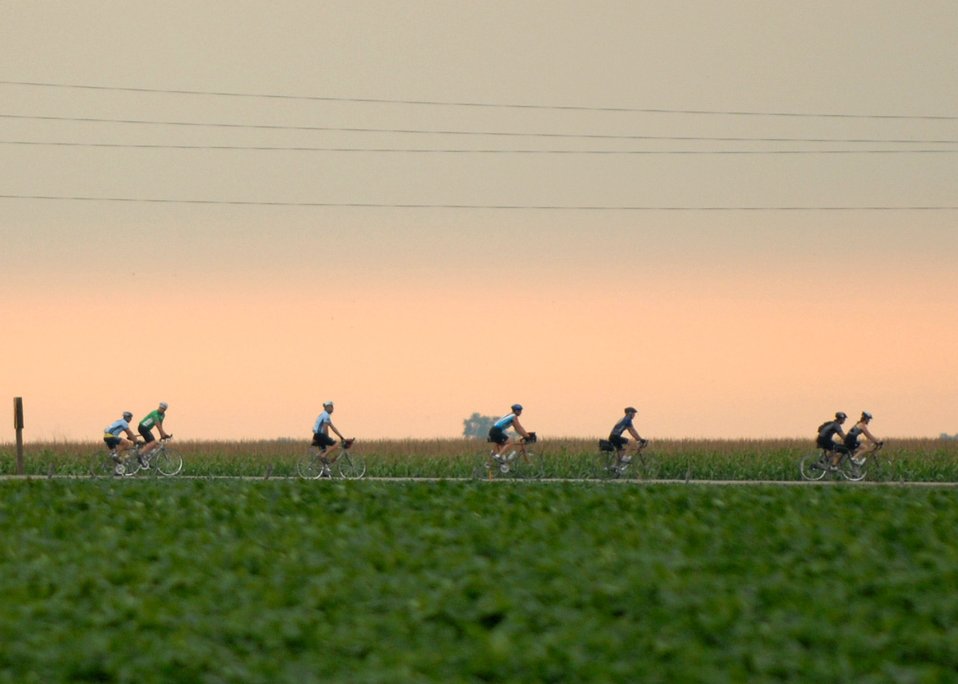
Airmen cycle across Iowa

Some of the 148 members of the U.S. Air Force Cycling Team ride across the Iowa countryside from Spencer to Humboldt July 23 during the third day of the Register's Annual Great Bike Ride Across Iowa, known as RAGBRAI, a cycling event sponsored by the Des Moines Register newspaper. This is the 13th year the Air Force Cycling Team has participated in the RAGBRAI to support Air Force recruiting.